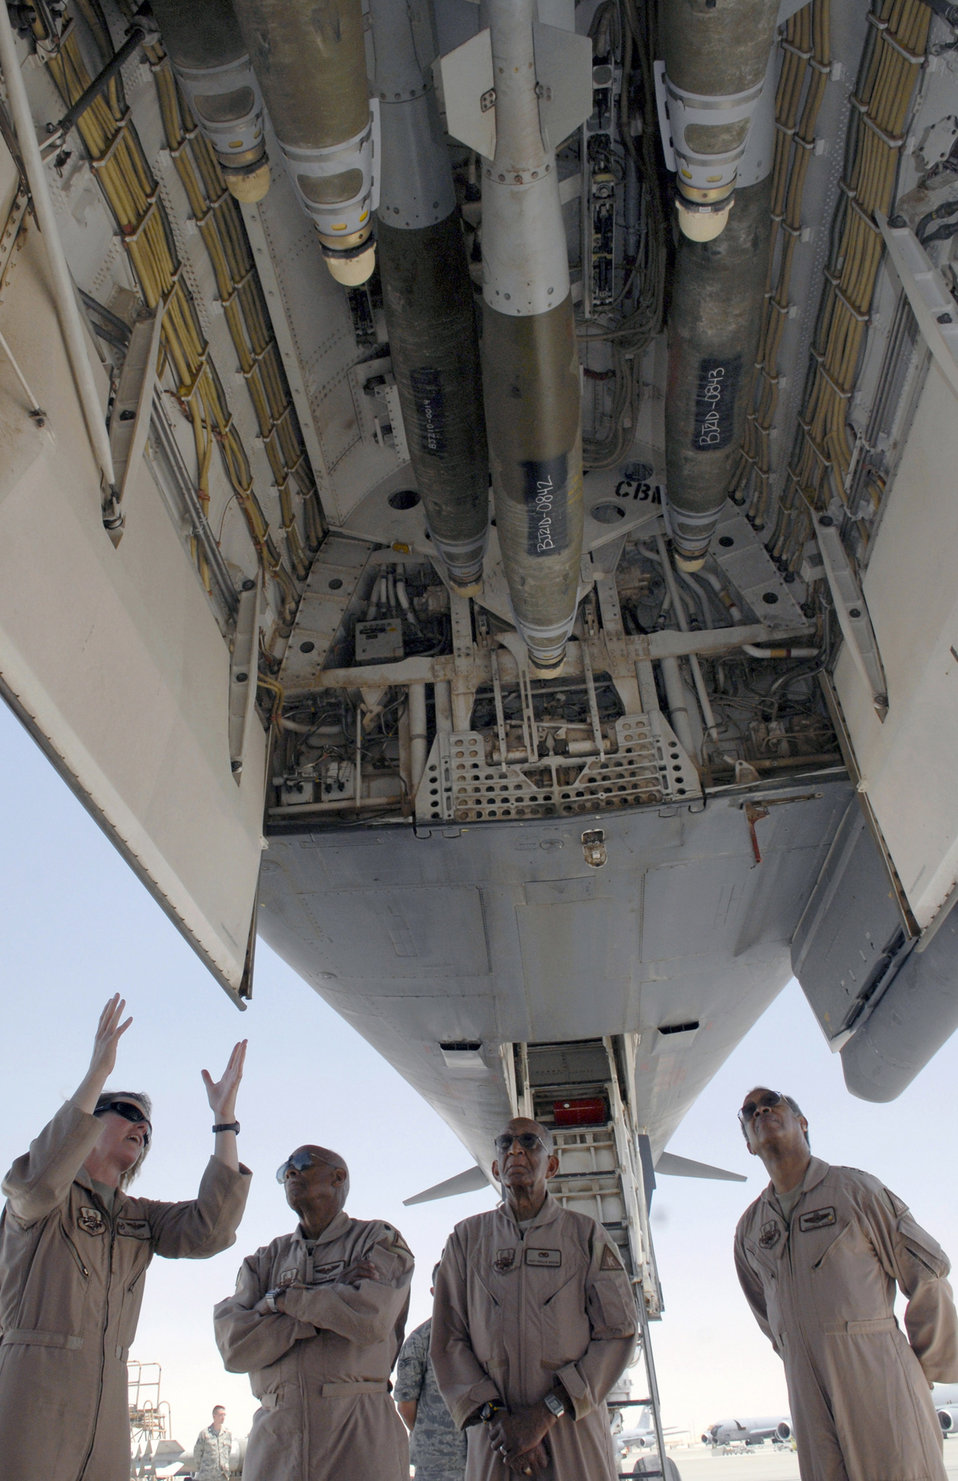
Times and aircraft have changed

Lt. Col. Jen Fullmer, 9th Expeditionary Bomb Squadron commander, shows the forward bomb bay of a B-1B Lancer at an air base in Southwest Asia April 22 to Tuskegee Airmen Lt. Col. Alexander Jefferson and Staff Sgt. Phillip Broom and to retired Lt. Gen. Russell Davis, president of the nonprofit Tuskegee Airmen, Inc.